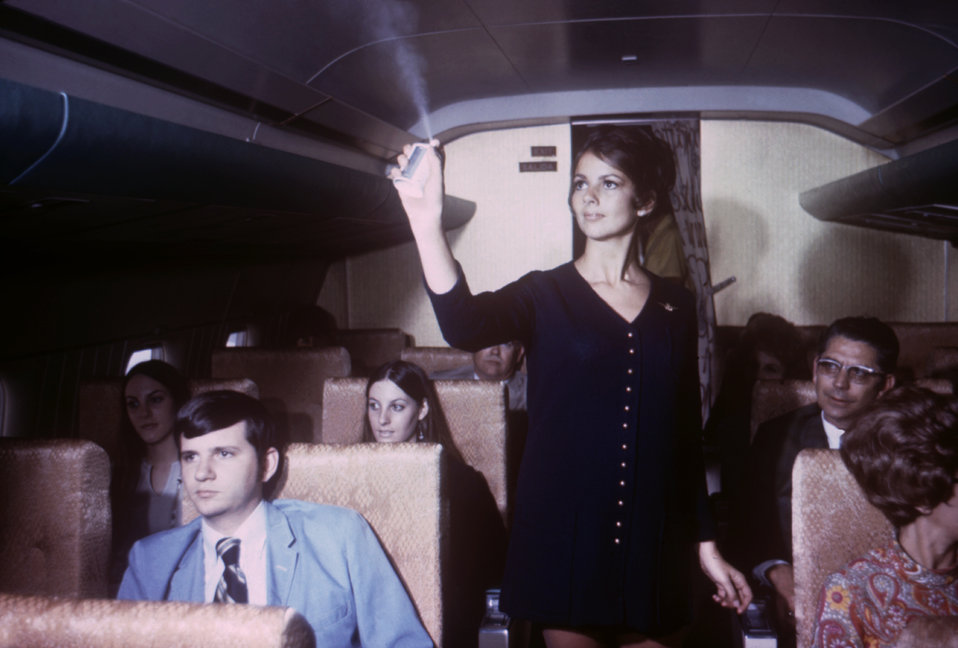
This is a 1971 photograph showing an airline employee spraying inside an aircraft with an aerosol pesticides spray.